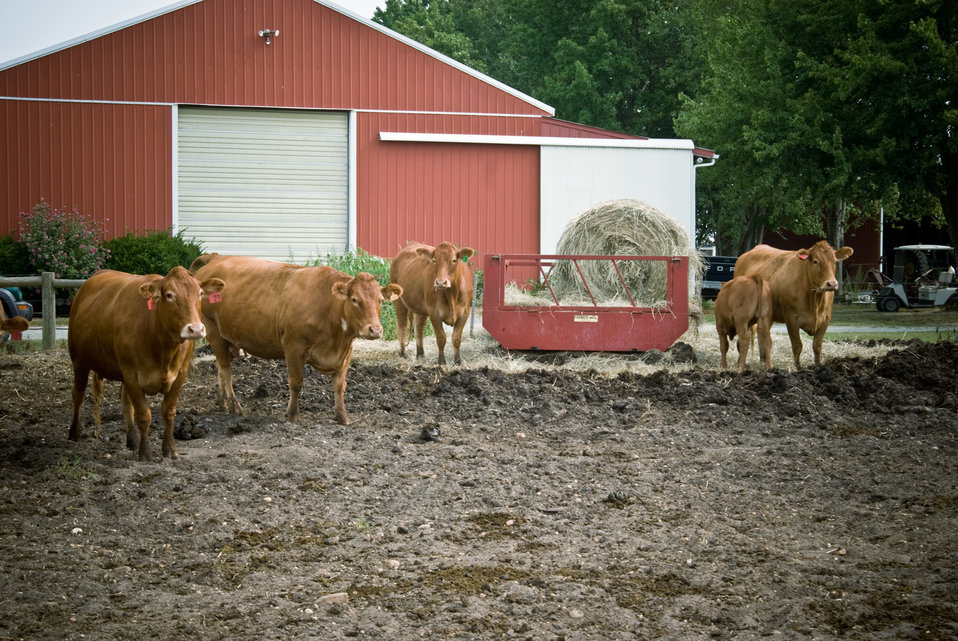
Dairy cows graze on a local farm in Caroline County, Maryland on August 14, 2008.